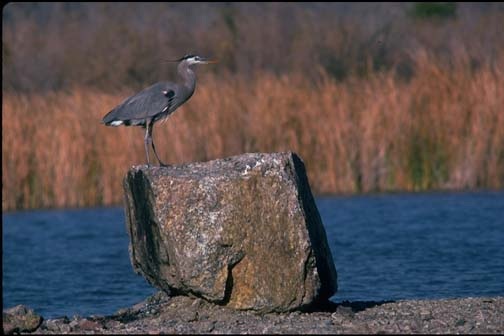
A Great Blue Heron perched on a rock at Mittry Lake.